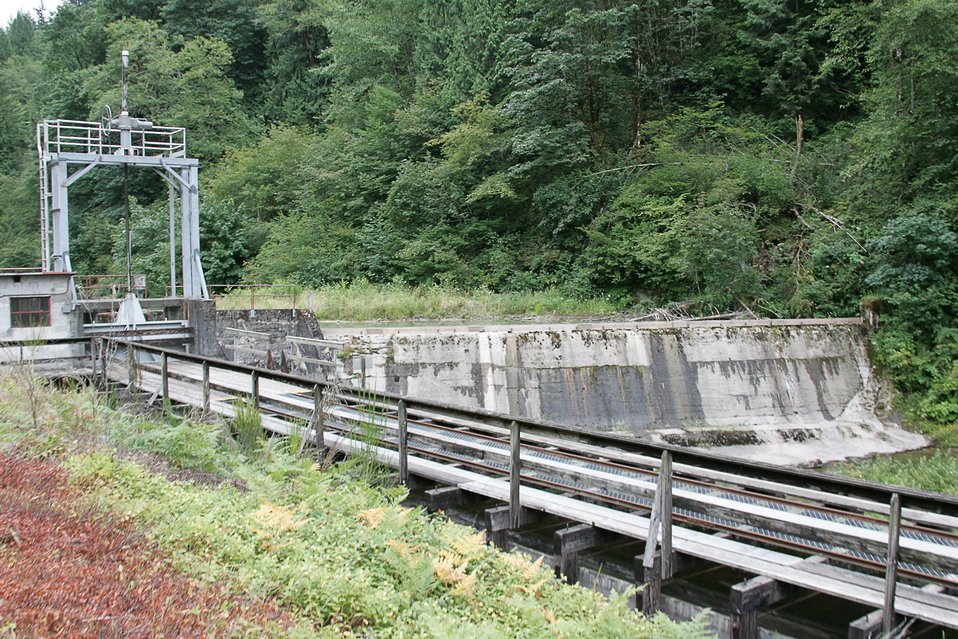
Little Sandy River Dam and flume.